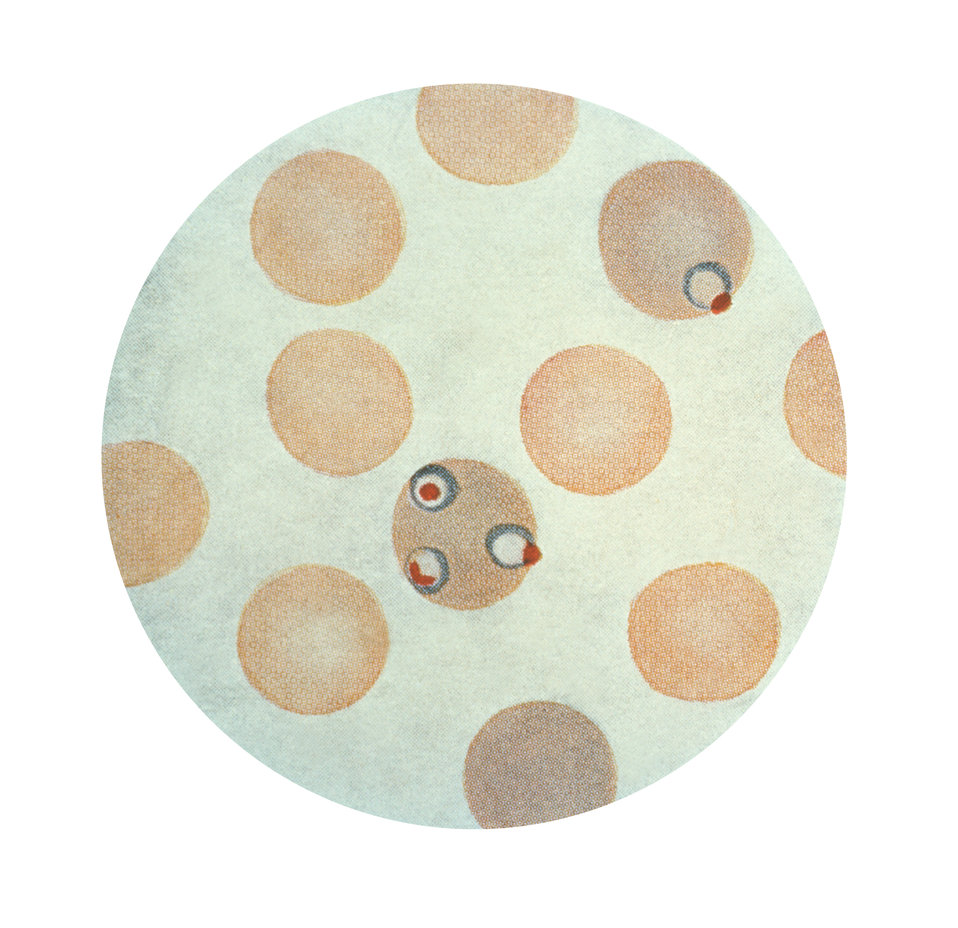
A photomicrograph of Plasmodium falciparum schizonts inside two erythrocytes using Wright's stains. (x1500)